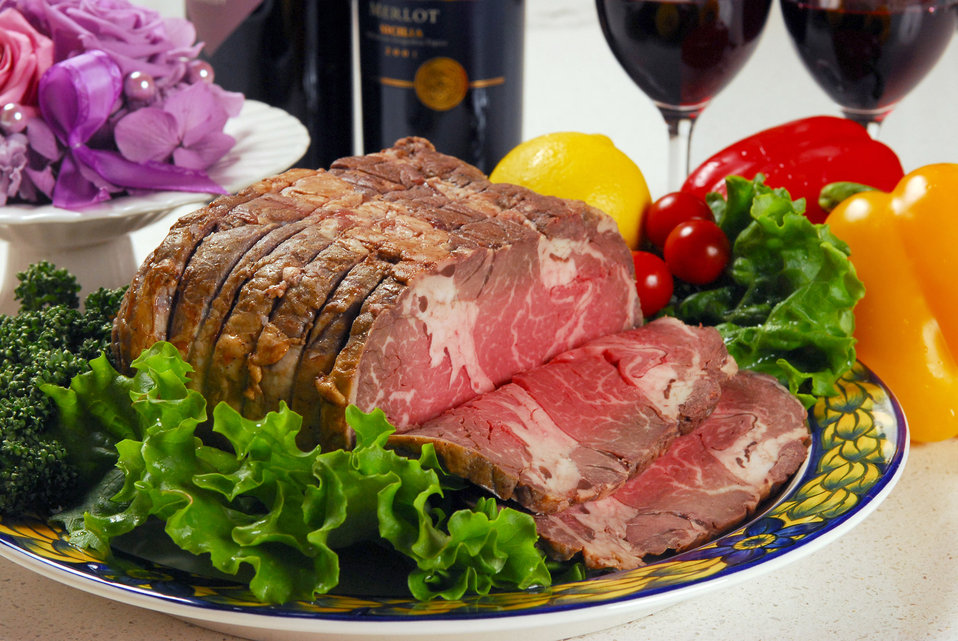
A chunk of beef 3

A chunk of beef.